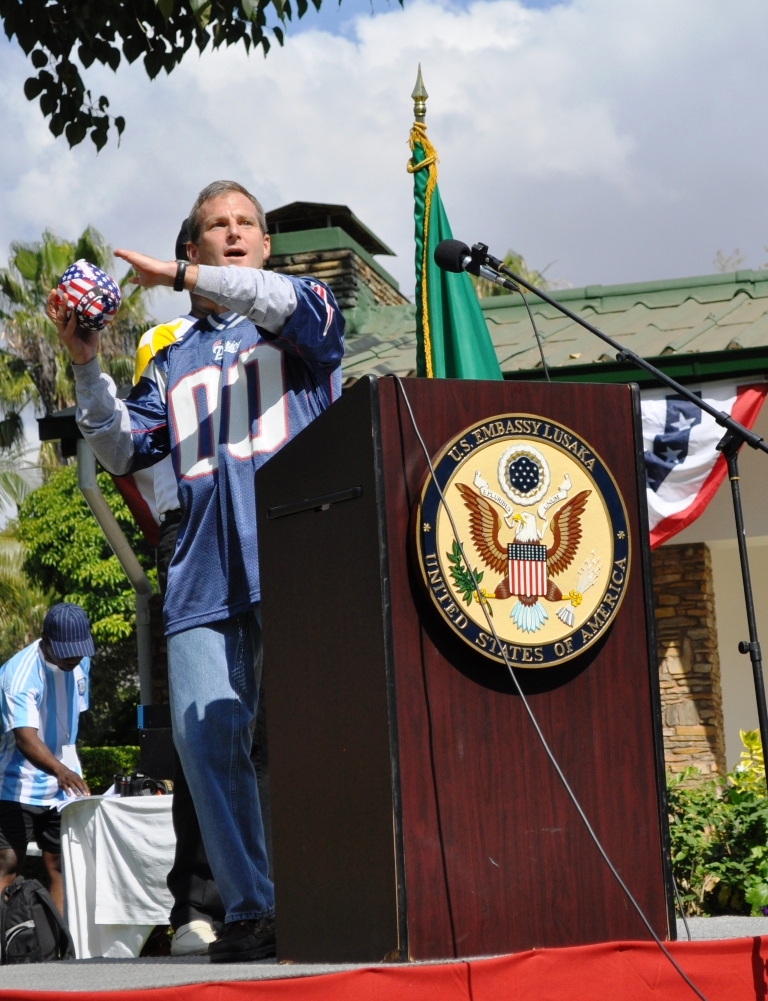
Chargé d’Affaires Koplovsky Enjoys U.S. National Day Commemoration

Chargé d’Affaires Michael Koplovsky enjoys the U.S. National Day commemoration on June 12,2010, at the Ambassador's residence in Lusaka, Zambia.